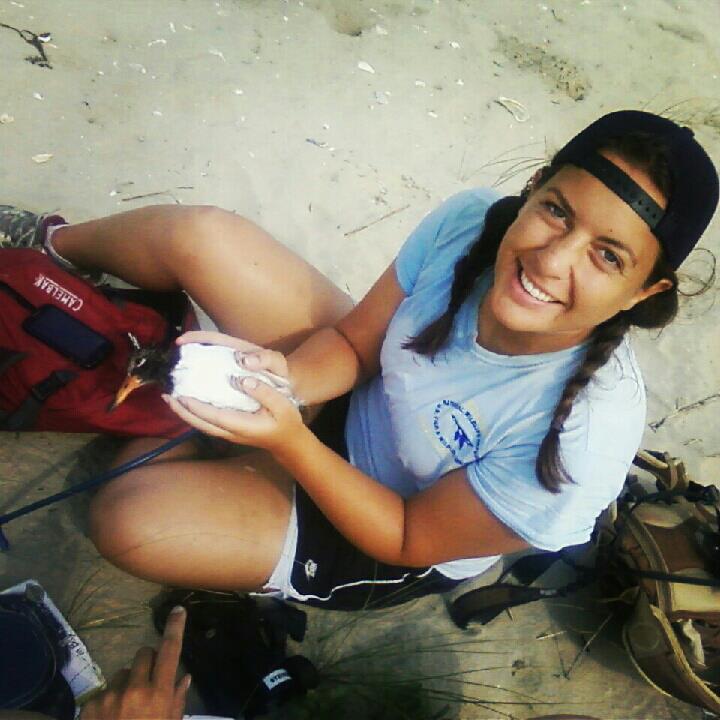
Jenna, during a summer internship at Chincoteague National Wildlife Refuge

U.S. Fish and Wildlife Service